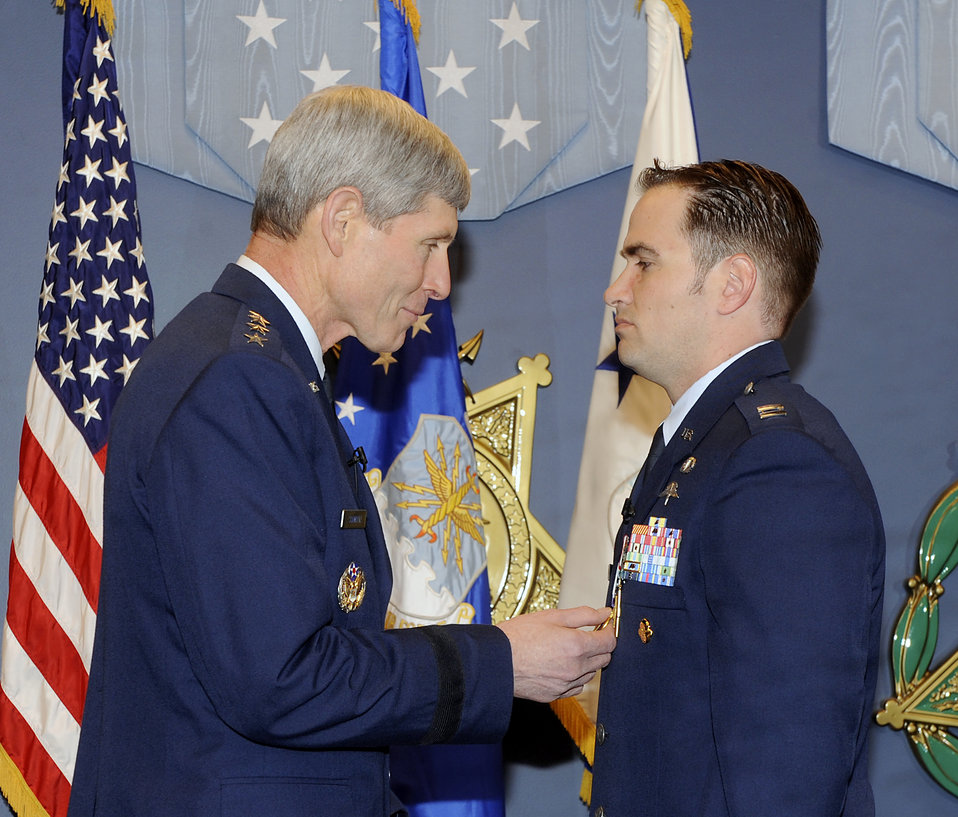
Air Force Cross ceremony

Air Force Chief of Staff Gen. Norton Schwartz pins the Air Force Cross on Capt. Barry Crawford during a ceremony in the Pentagon's Hall of Heroes in Washington, D.C., on April 12, 2012.